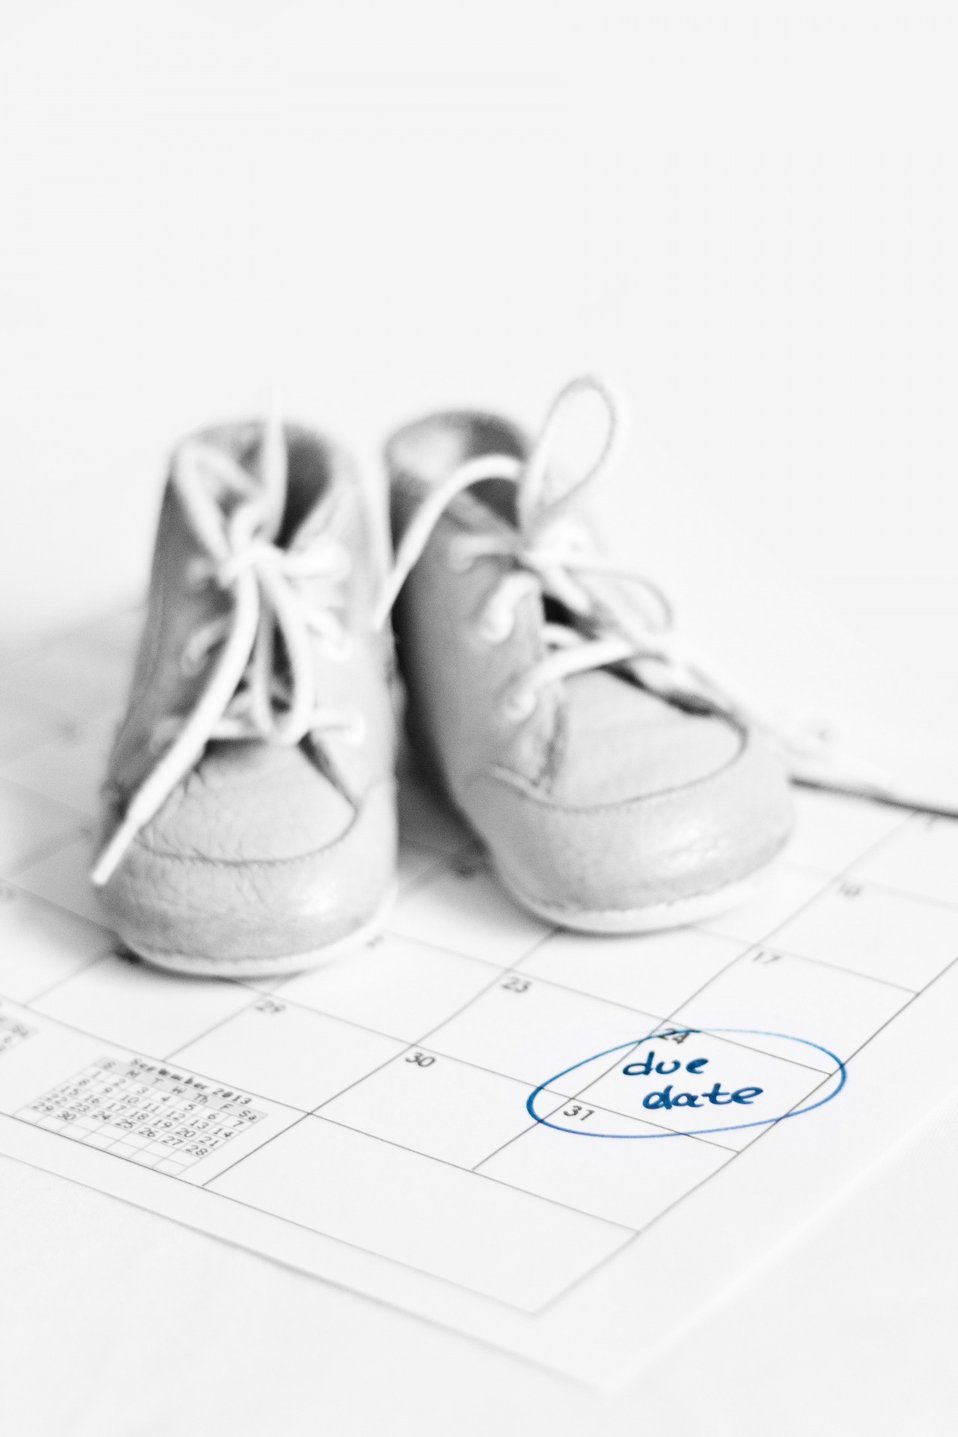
Due date calendar.